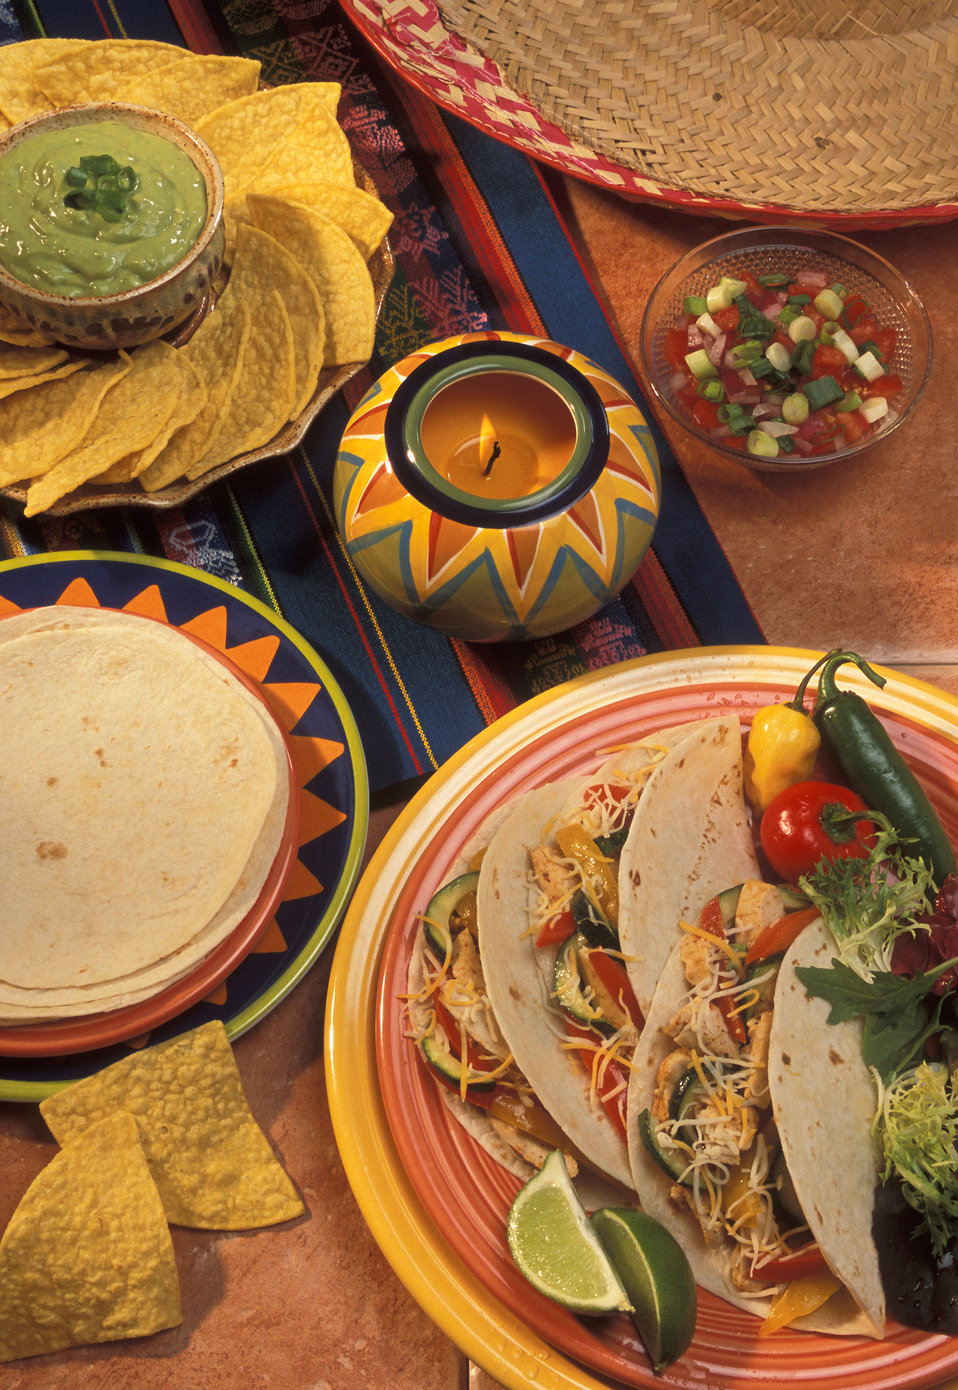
The U.S. Department of Agriculture’s (USDA) Agriculture Research Service (ARS) is conducting studies on how to keep wheat flour tortillas (the soft, white tortillas shown here) fresh on June 258, 2004.